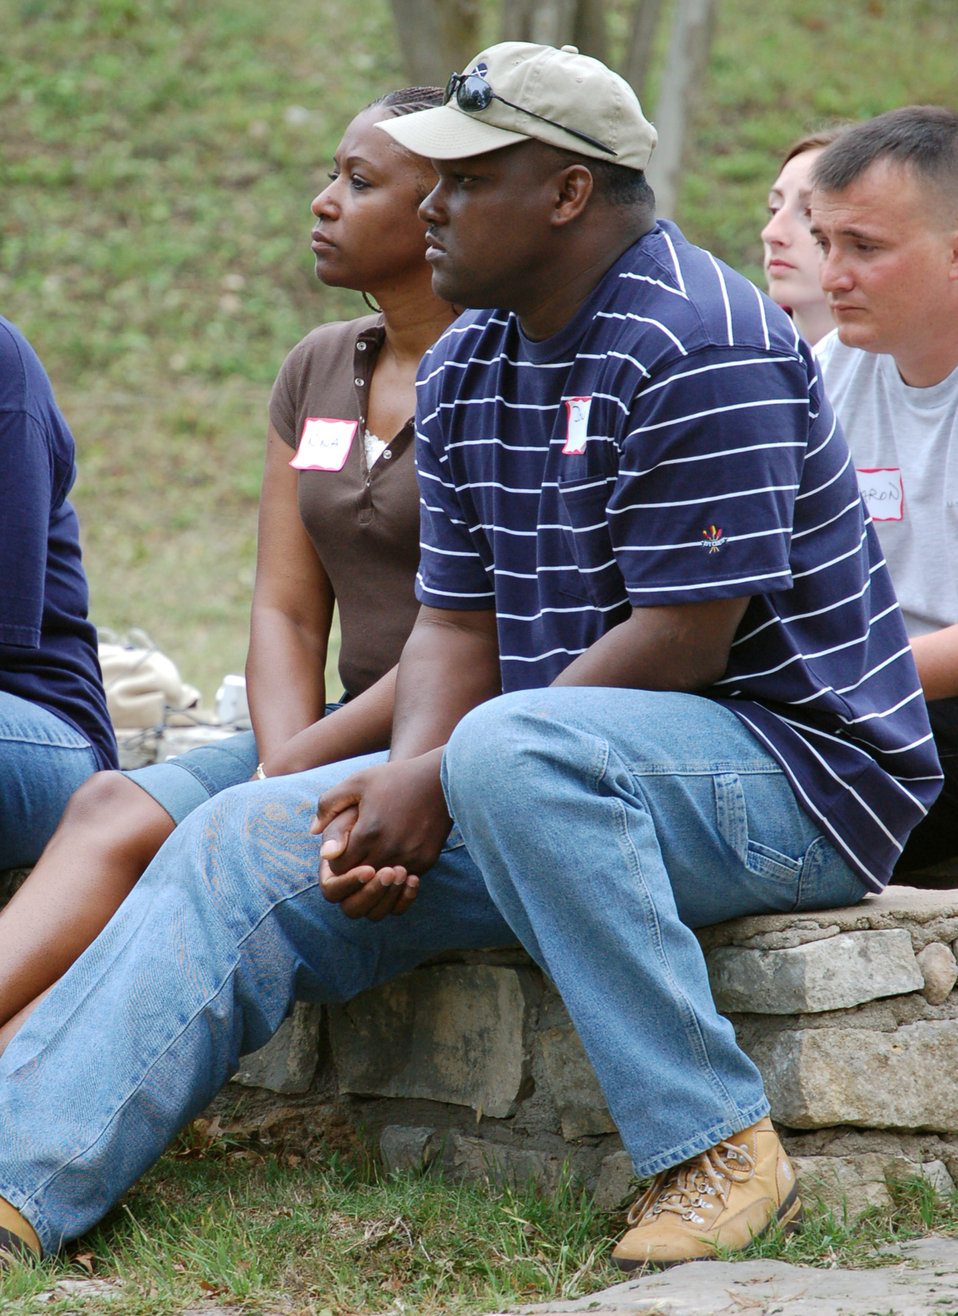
Retreat reconnects couples

Nina and Master Sgt. Don Taylor (front) and Mellissa and Senior Airman Aaron Childs attend a Native American spiritual ceremony during a retreat at the Heart of the Hills Camp in Hunt, Texas, on Saturday, April 22, 2006. The retreat, hosted by the Military, Veteran and Family Assistance Foundation, helps couples reconnect after the military spouse returns from a deployment.